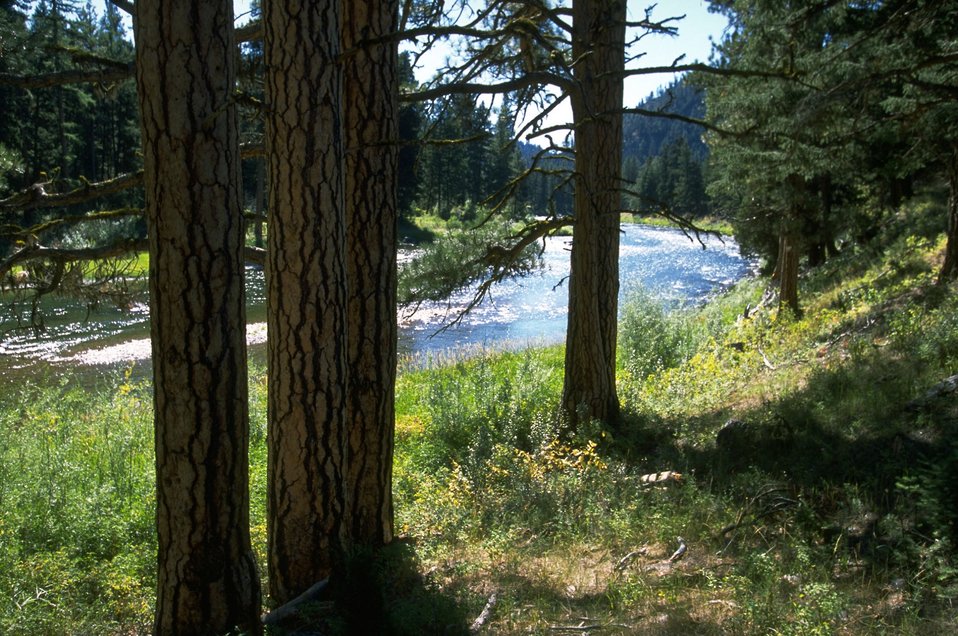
Old growth Pondersosa pine along Blackfoot River